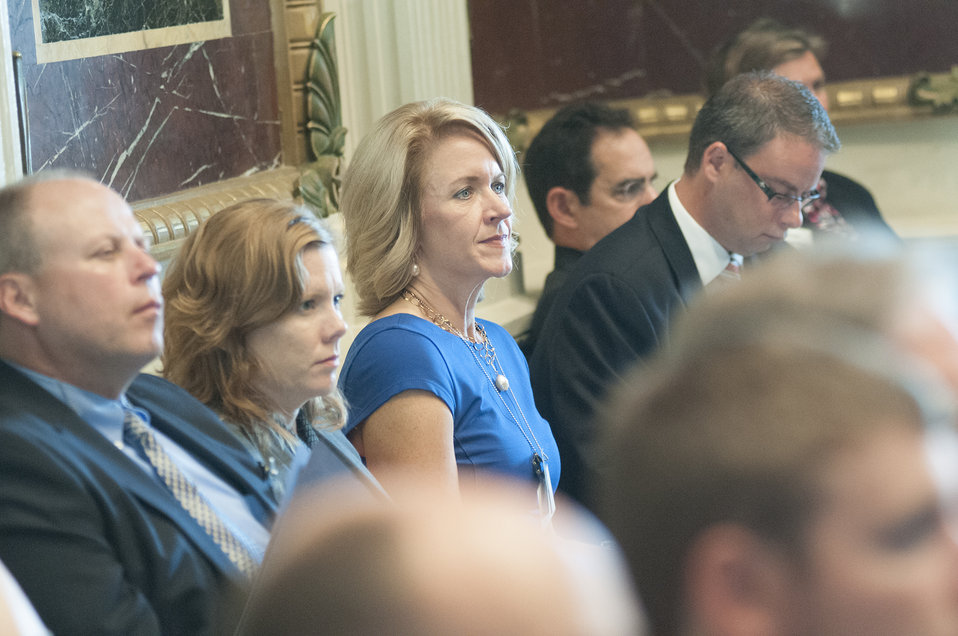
The audience listens to Agriculture Secretary Tom Vilsack during his address at the 2nd Annual meeting of the White House Rural Forum on Regional Innovation at the Executive Office Building in Washington, D.C. on Wednesday, Sep. 18, 2013.